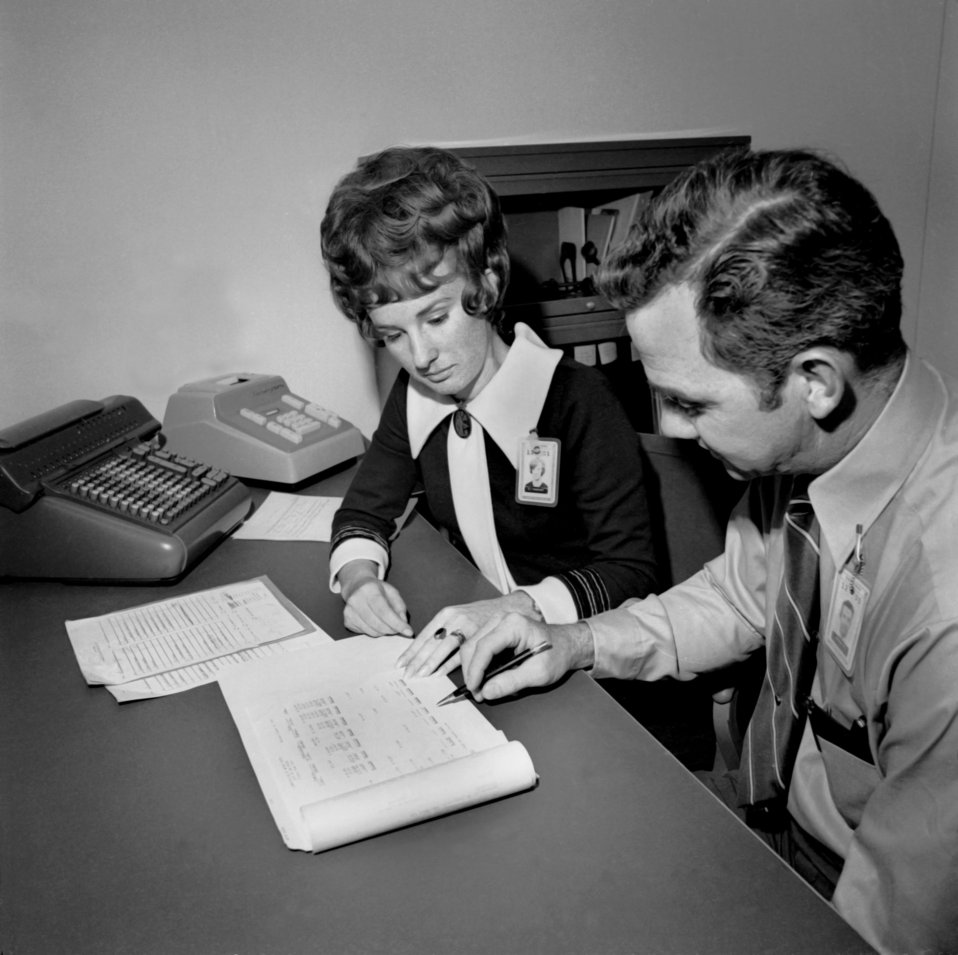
Series Federal Women's Program Oak Ridge

70-350a DOE photo by Frank Hoffman

Series Federal Women's Program Oak Ridge Tennessee 11-5-1970